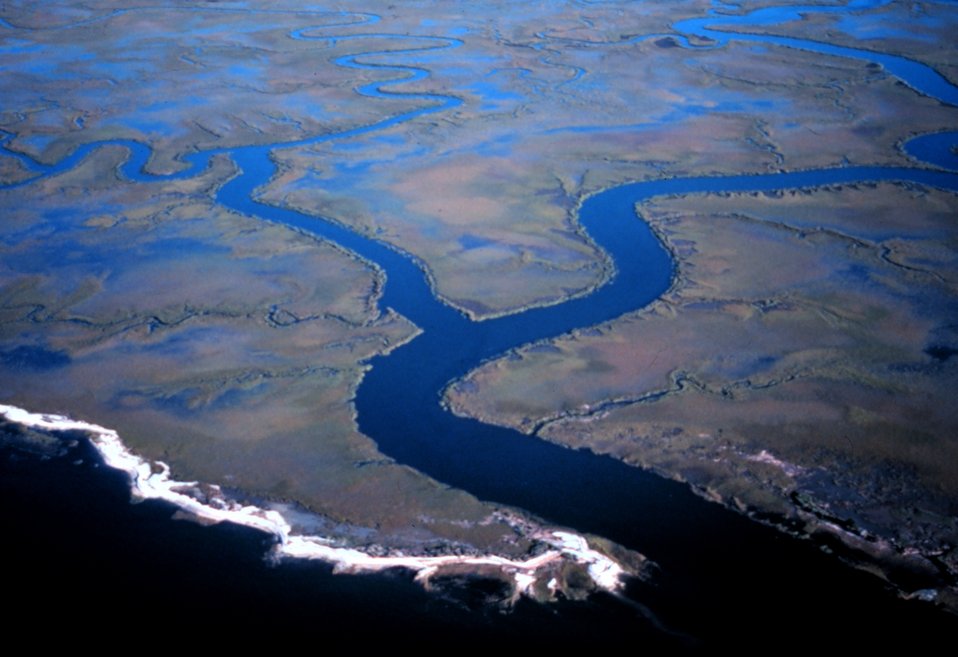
ACE Basin National Estuarine Research Reserve. A magnificent view of wetlands and tidal streams in the Ashe Island area.